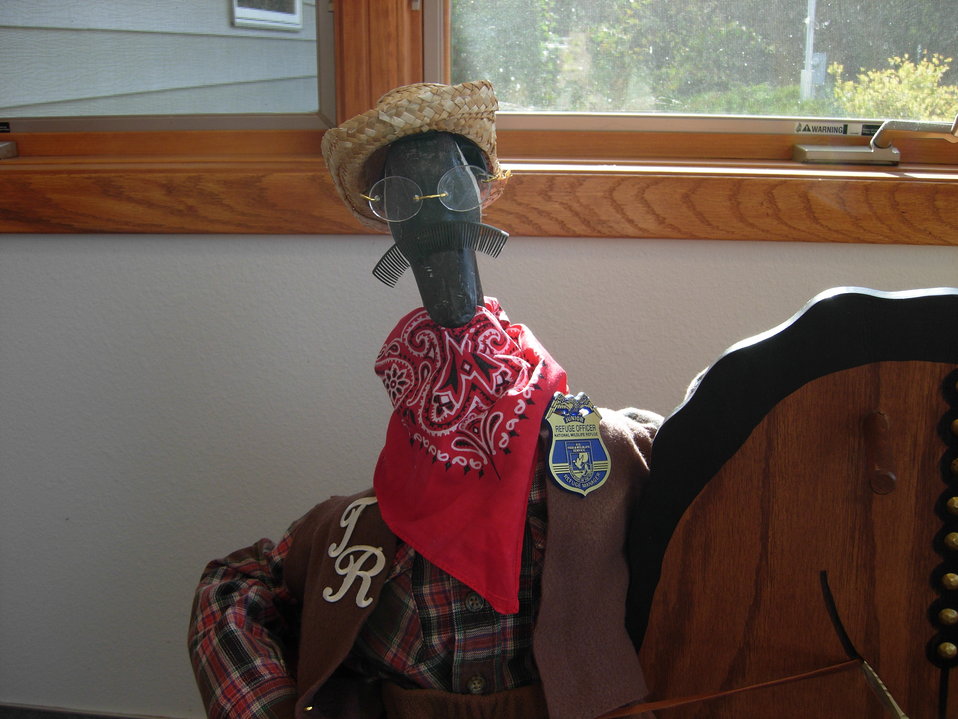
Teddy 'Goosevelt' at Des Lacs Refuge

Des Lacs Refuge participated in the Annual Kenmare 'Goose on the Loose' contest by entering refuge mascot 'Teddy GOOSEvelt!'